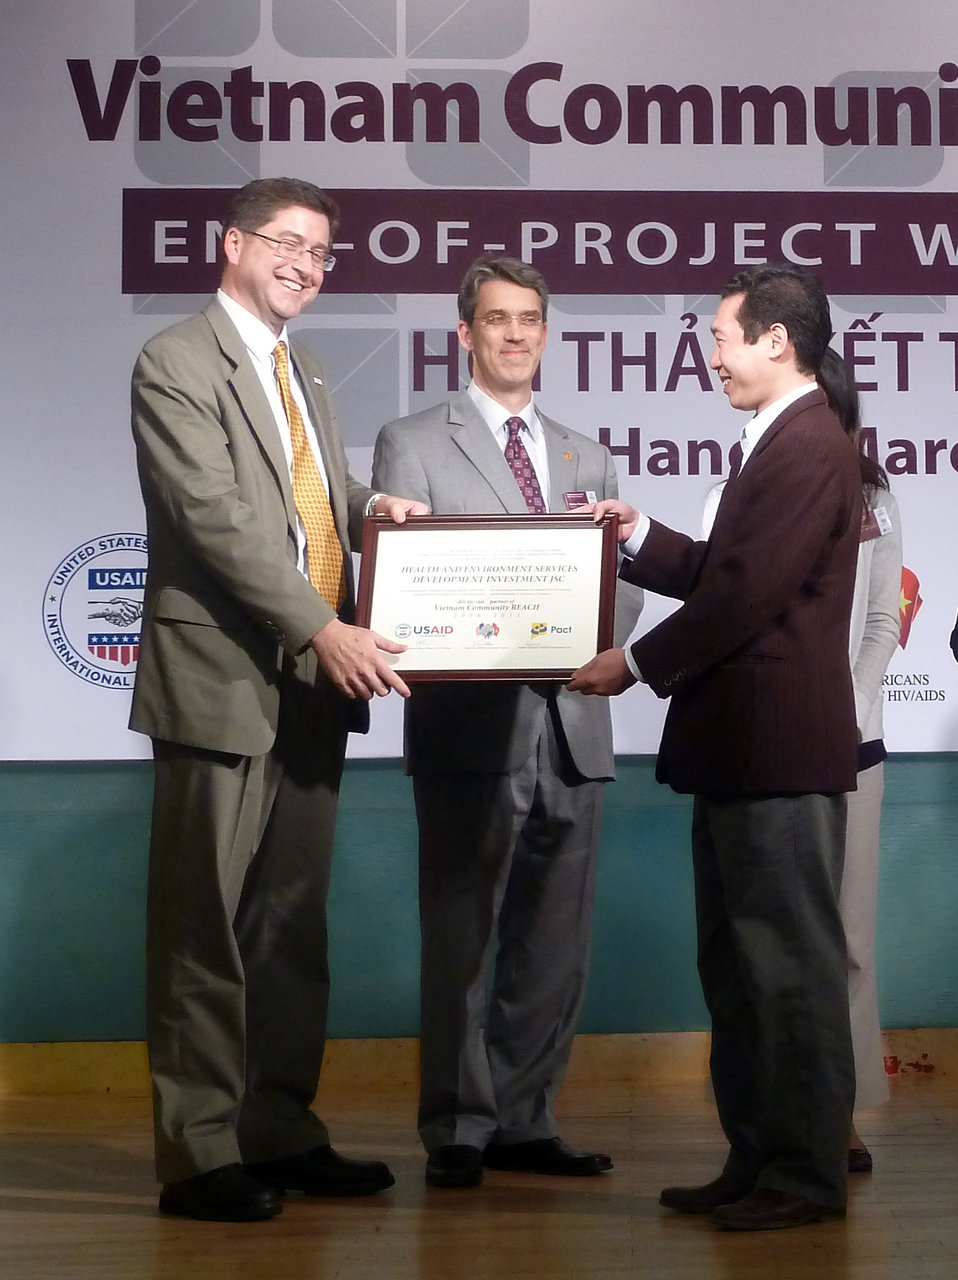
USAID, PEPFAR, and Pact award certificates to local and international partners for their work in addressing HIV in Vietnam

Community REACH project close-out with USAID and implementing partner, Pact